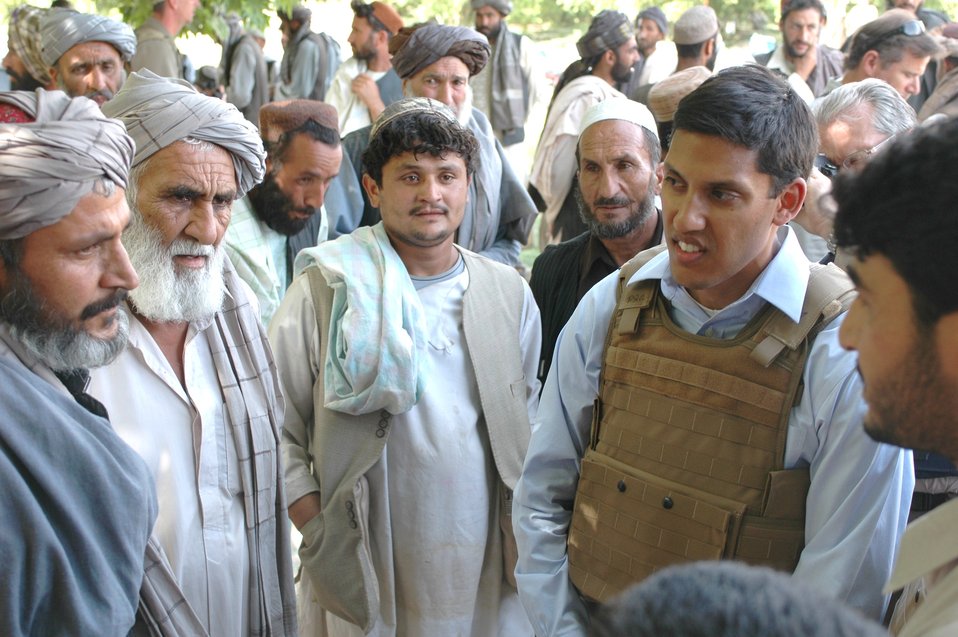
Dr Shah Visits Argandab April 10, 2010